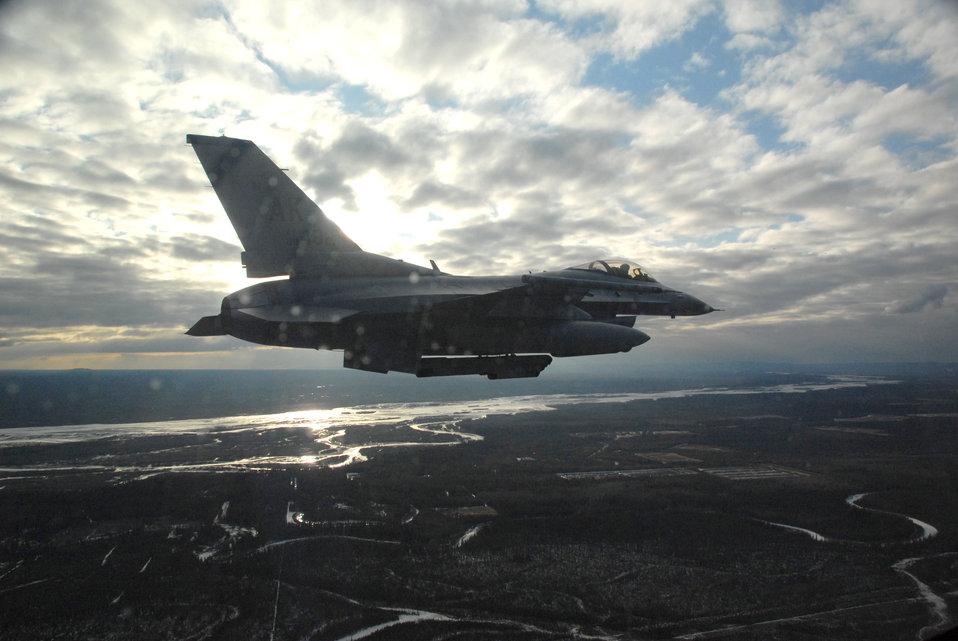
First 2007 RF-A exercise ends on positive note

Capt. Jeremy Wimer enters final approach over Eielson Air Force Base, Alaska, after returning from a Red Flag-Alaska mission. Red Flag-Alaska is a Pacific Air Forces-directed field training exercise for U.S. forces flown under simulated air combat conditions. Captain Wimer is an F-16 Fighting Falcon pilot from the 18th Fighter Squadron.